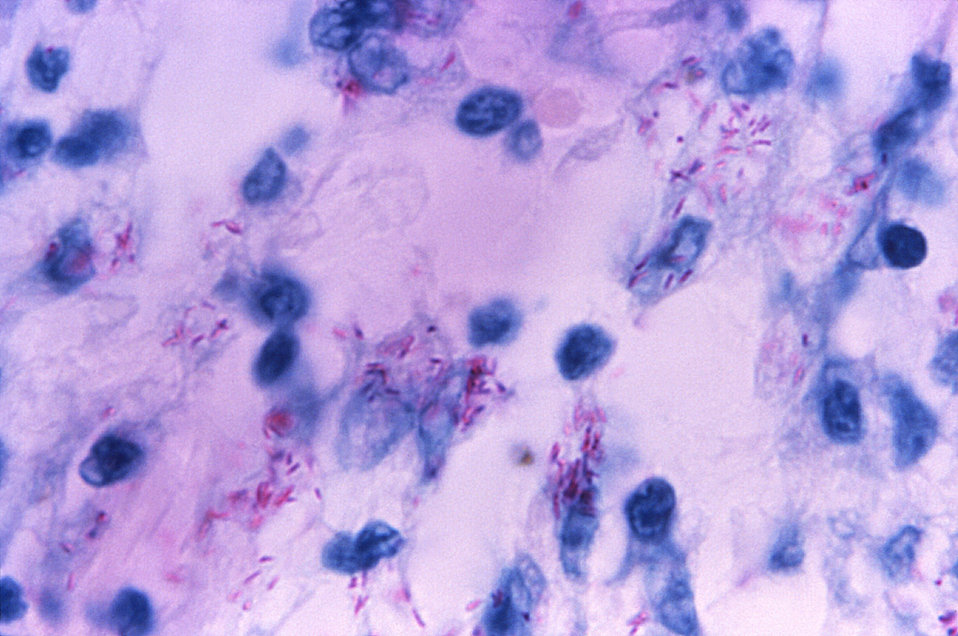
This light photomicrograph revealed some of the histopathologic cytoarchitectural characteristics seen in a mycobacterial skin infection.